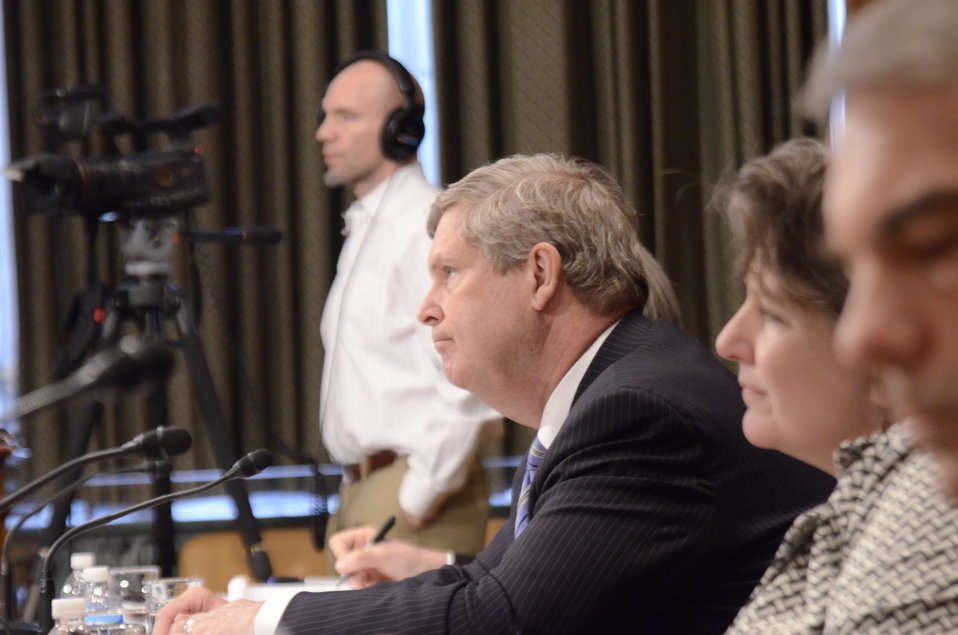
Agriculture Secretary Tom Vilsack and Agriculture Deputy Secretary Dr. Kathleen Merrigan testify before the Senate Agriculture Appropriations Committee on the fiscal year 2013 budget at the Dirksen Senate Office Building in Washington, D.C., on Thursday, March 29, 2012.